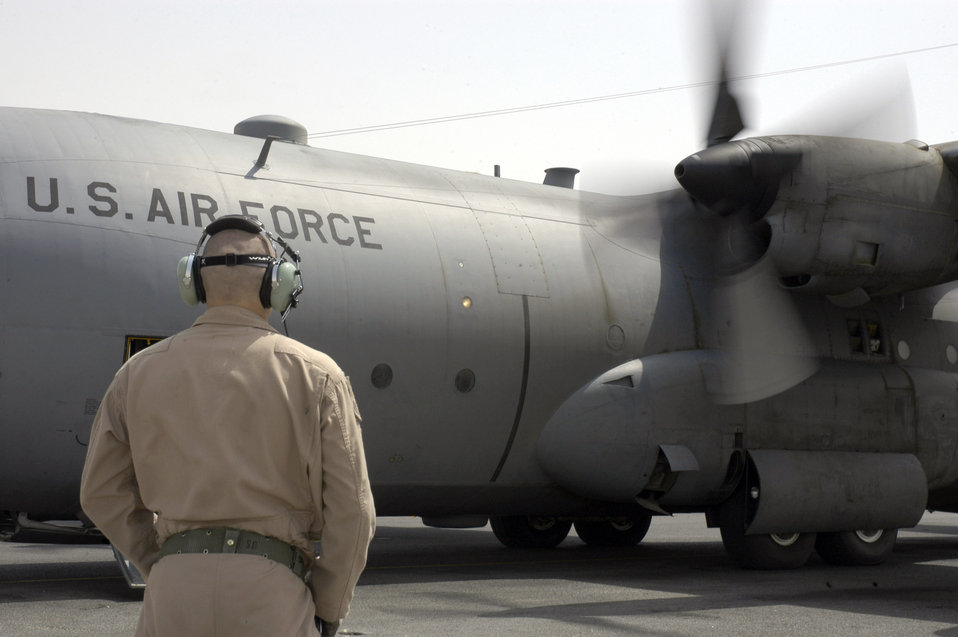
Airlift support

A loadmaster with the 738th Expeditionary Airlift Squadron watches as the aircraft commander fires up the engine of a C-130 Hercules at a forward operating base in Southwest Asia Aug. 23. The 738th EAS is part of the 386th Air Expeditionary Wing, which is the primary aerial hub for Operation Iraqi Freedom and provides airlift support for Operation Enduring Freedom and the Horn of Africa.